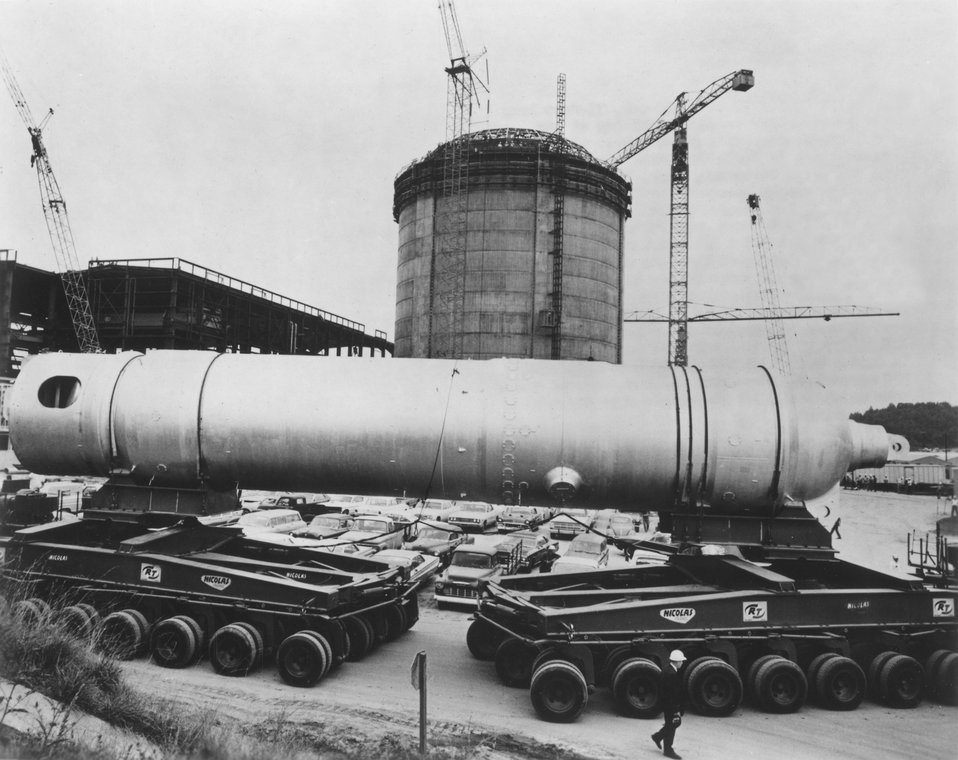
a 570-ton, 73-foot long nuclear steam generator is shown arriving at the site of Duke Power Company's giant Oconee station under construction in South Carolina. Circa 1970.